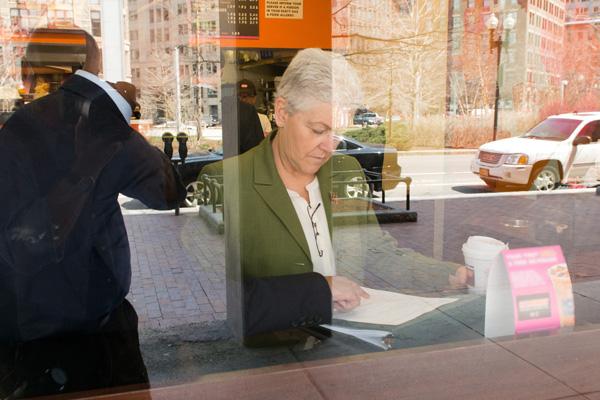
Day in the Life - Earth Day, April 22, 2014

11:32 am – McCarthy reviews briefing materials with staff for the day’s events ahead. (2/12)